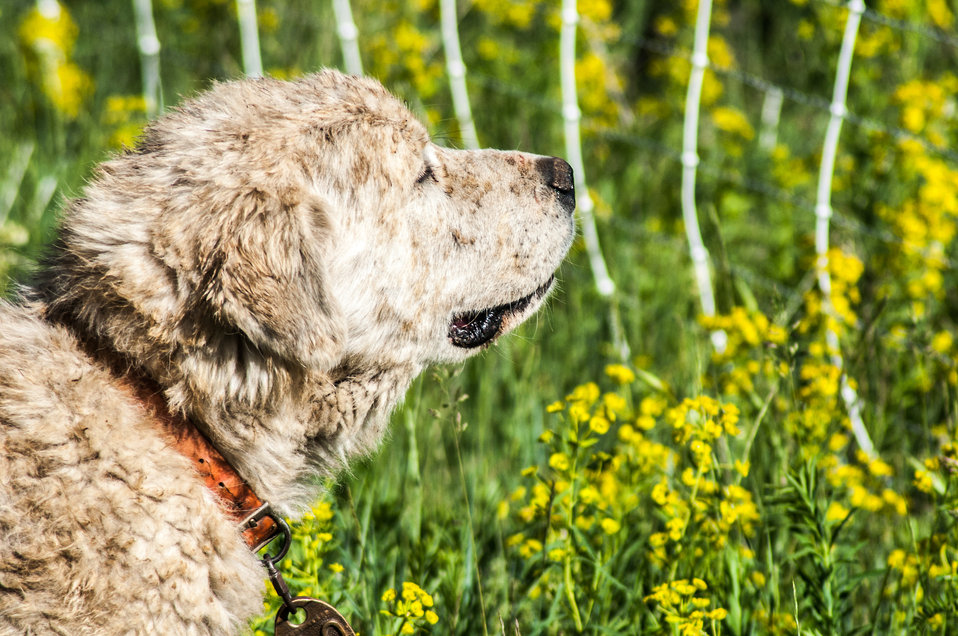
Goat landing on Bozeman Fish Technology Center

On June 8 at 5:00 p.m., 409 yearling domestic goats were off-loaded on the Bozeman Fish Technology Center (BFTC) campus. Thus begins a 3-4 year project of monitored targeted grazing and applications of friendly insects to control noxious weeds and manage brush overgrowth on property of the U.S. Fish and Wildlife Service BFTC.

Purposes of this effort are to reduce the presence of undesirable vegetation, promote restoration of native plants, and assist with fire protection by reducing burnable plant biomass.

The cooperative venture involves the U.S. Fish and Wildlife Service, Montana Outdoor Science School, Friends of the Bozeman Fish Technology Center, Gallatin Valley Land Trust, U.S. Forest Service, and Prescriptive Livestock Services. Integrated Weed Control is supplying the insects as an in-kind contribution to the project, and has applied insects on the BFTC’s 'hot spots' in previous years.